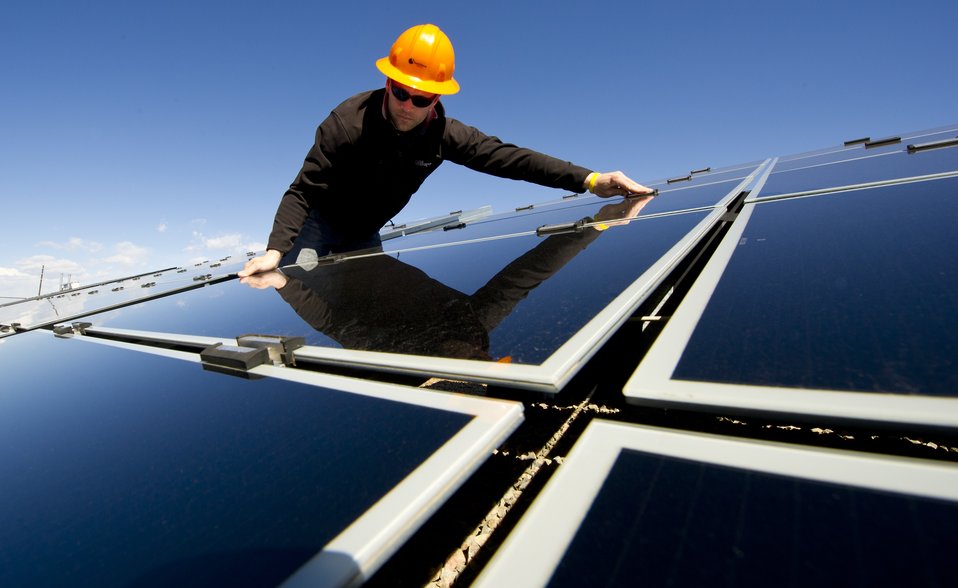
SOLARTAC TEST FACILITY IN AURORA, COLORADO.

SunEdison is an original founding member of SolarTAC. SolarTac is an integrated, world-class test facility where the solar industry will test, validate, and demonstrate near-market and advanced solar technologies. The SolarTac mission is to increase the efficiency of solar energy productions and rapidly deploy them to the commercial market.